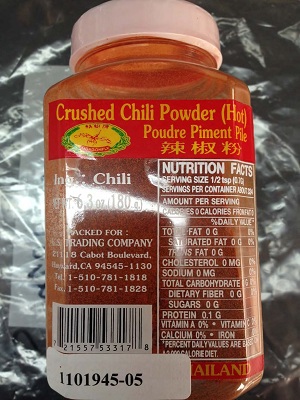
RECALLED – Crushed Chili Powder

May 13, 2014 – Product Recall – US Trading Company Voluntary Recall of Crushed Chili Powder Because of Possible Health Risk.